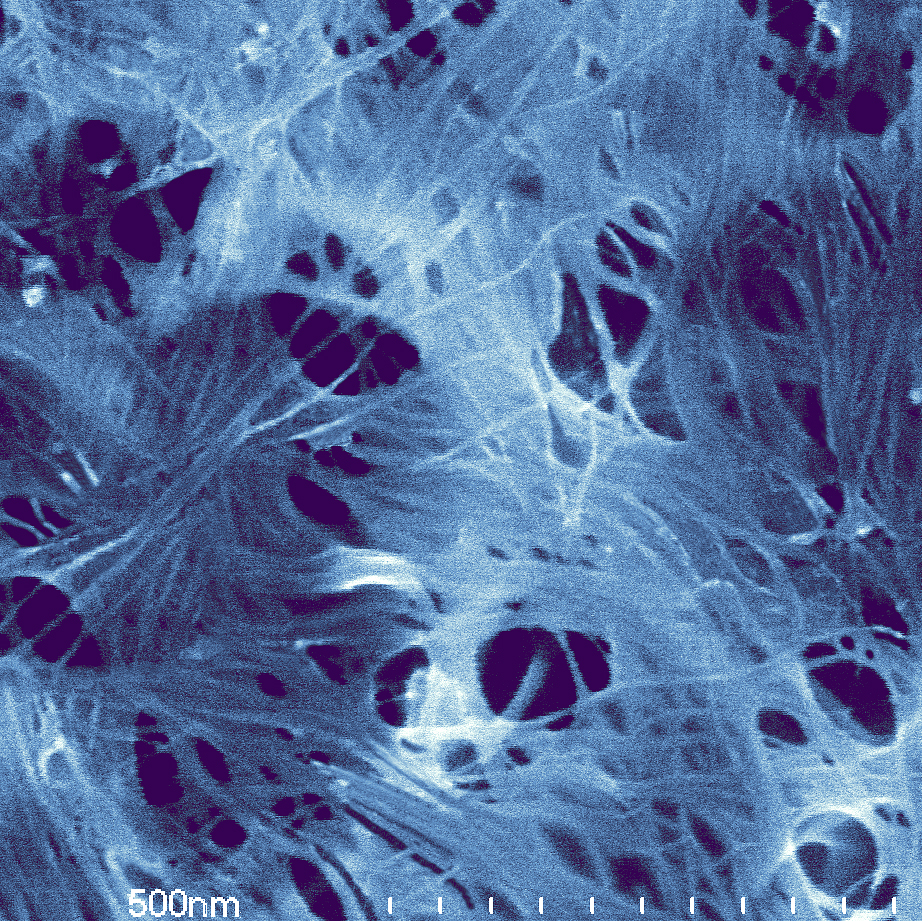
Buckypapers

Buckypaper: SEM image demonstrates a pseudo 2D network of carbon nanotubes deposited like paper fibers in a thin, sparse sheet. The nanotubes here have an average length 820 nm, and make a continuous, electrically conducting network overall in spite of obvious gaps. On a macroscale this material would be nearly transparent. Color added for clarity.